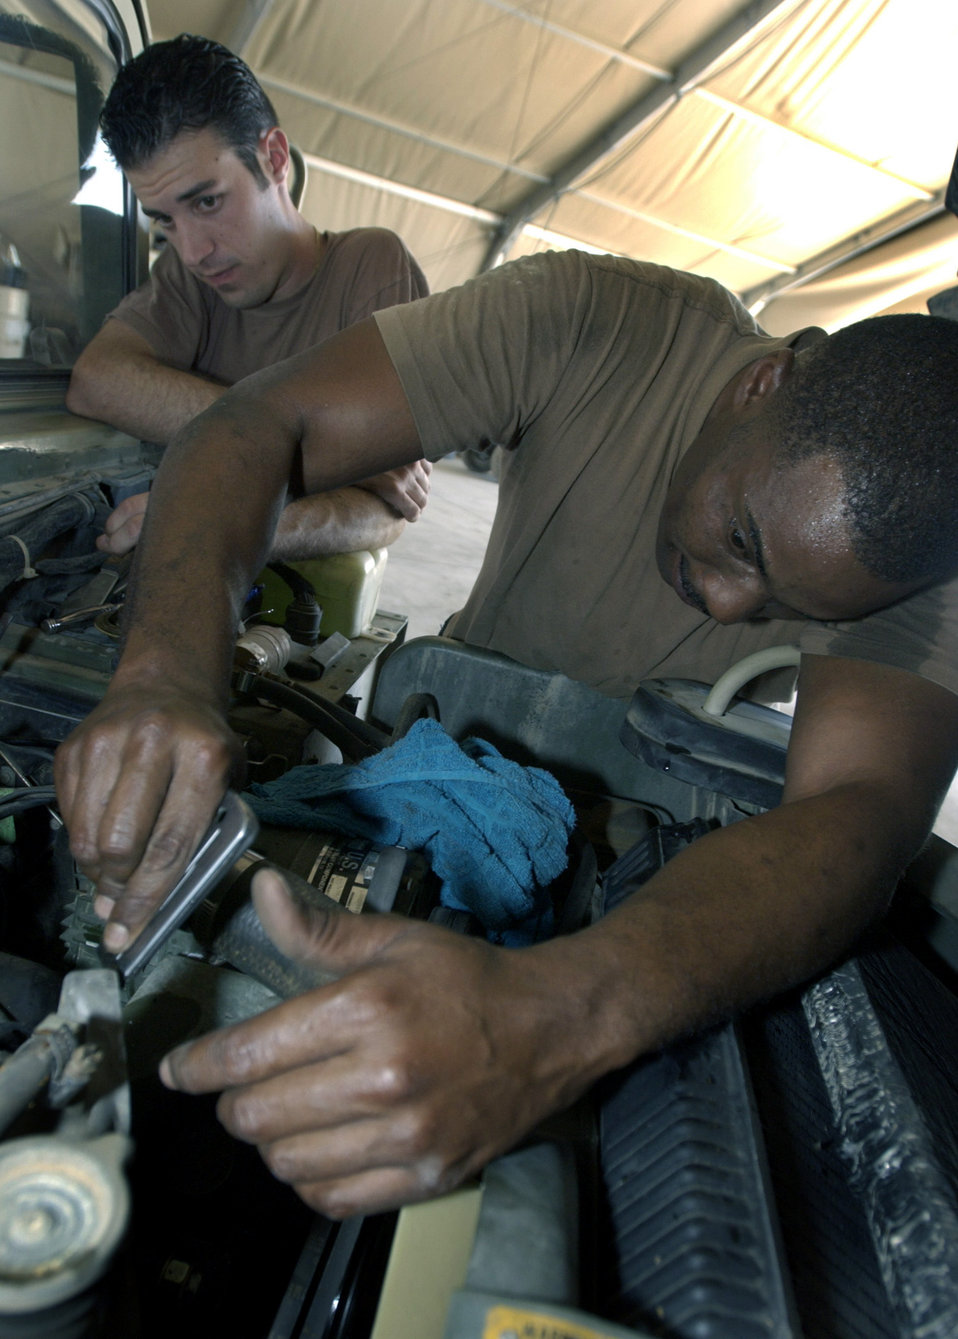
Maintainers keep perfect record

KARSHI-KHANBAD AIR BASE, Uzbekistan -- Staff Sgt. Jason Curra (left) and Tech. Sgt. William Underwood clean off a thermostat gasket on a Humvee. The vehicle mechanics are assigned to the 416th Air Expeditionary Group here where, for the past two months, they have maintained a 100-percent vehicle in-commission rate.